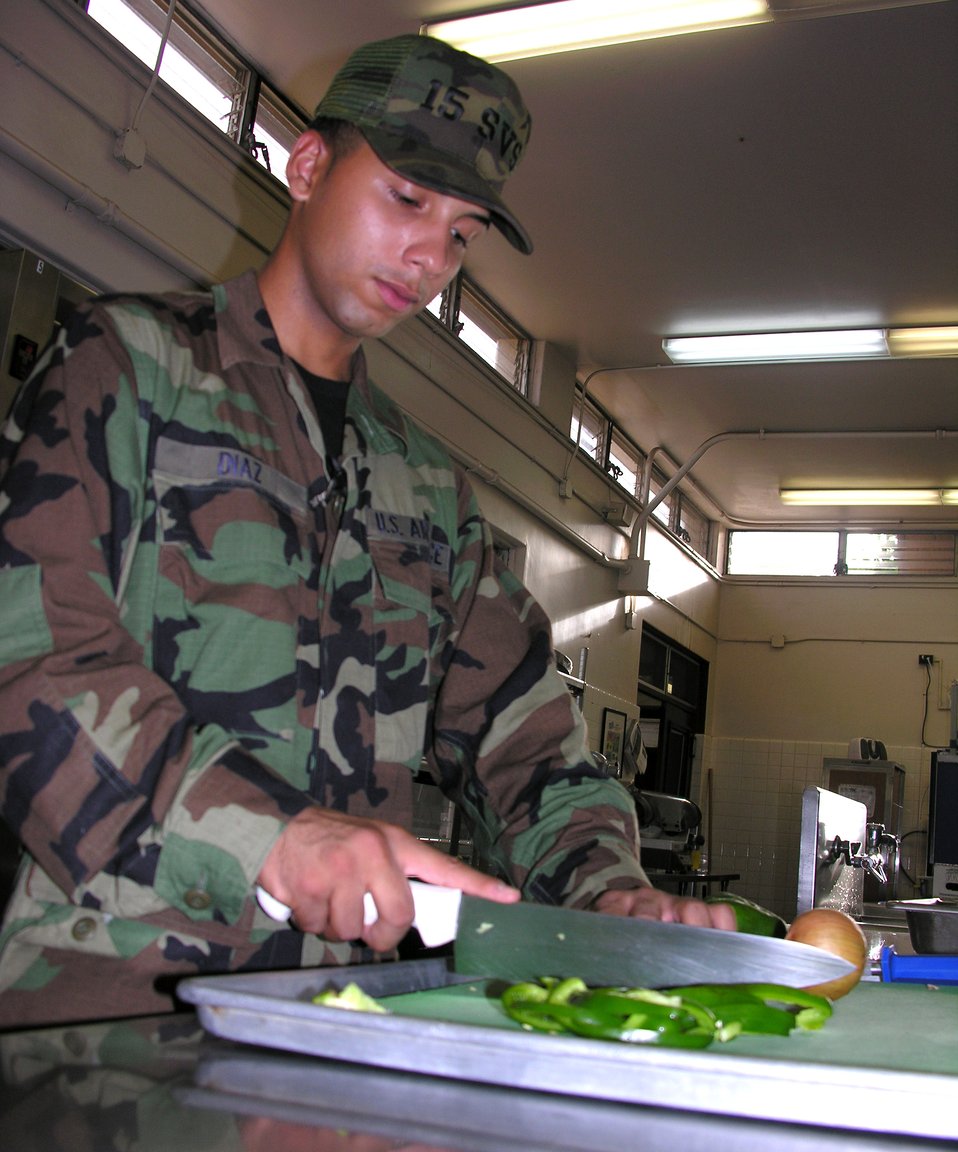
Serving through the season: Airman Basic Alex Diaz

Airman Basic Alex Diaz chops bell peppers for fajitas to be served during the lunch meal at the Hale' Aina Dining Facility at Hickam Air Force Base, Hawaii. Airman Diaz is assigned to the 15th Services Squadron and will work Christmas day to prepare and serve the holiday meal.